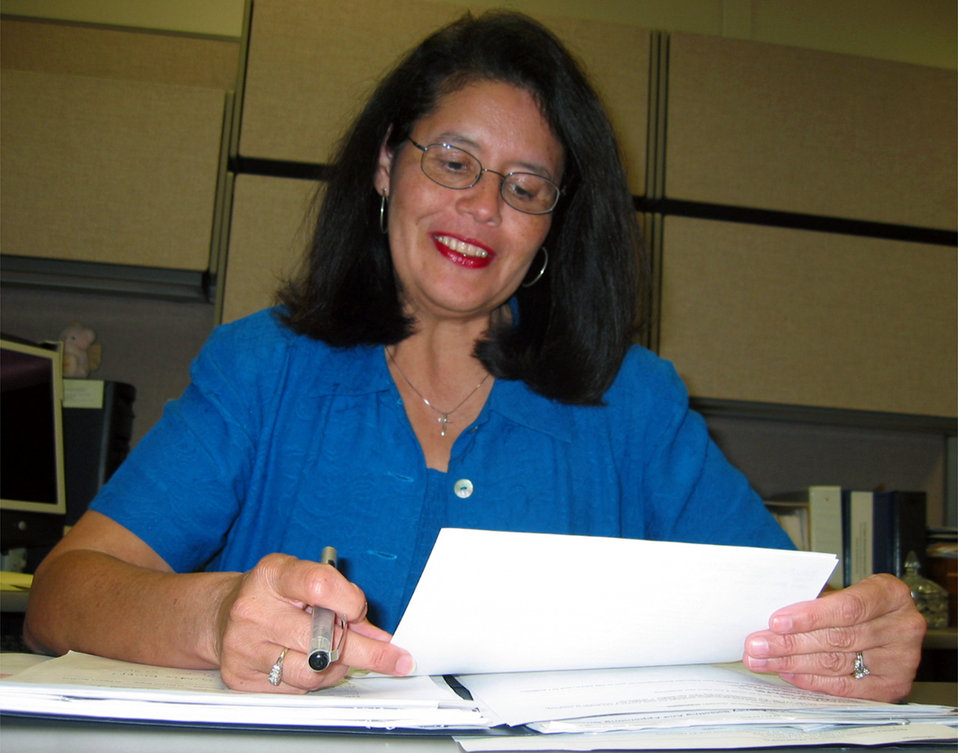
Recognizing excellence

LAUGHLIN AIR FORCE BASE, Texas -- Esther Gomez, the civilian personnel chief here, received the Outstanding Department of Defense Hispanic Civilian Award for the Air Force on April 15 from the National Association of Hispanic Federal Executives. The award recognizes a civilian Hispanic employee from each branch of the armed services for leadership and innovation that increase the effectiveness of the organization's overall mission.